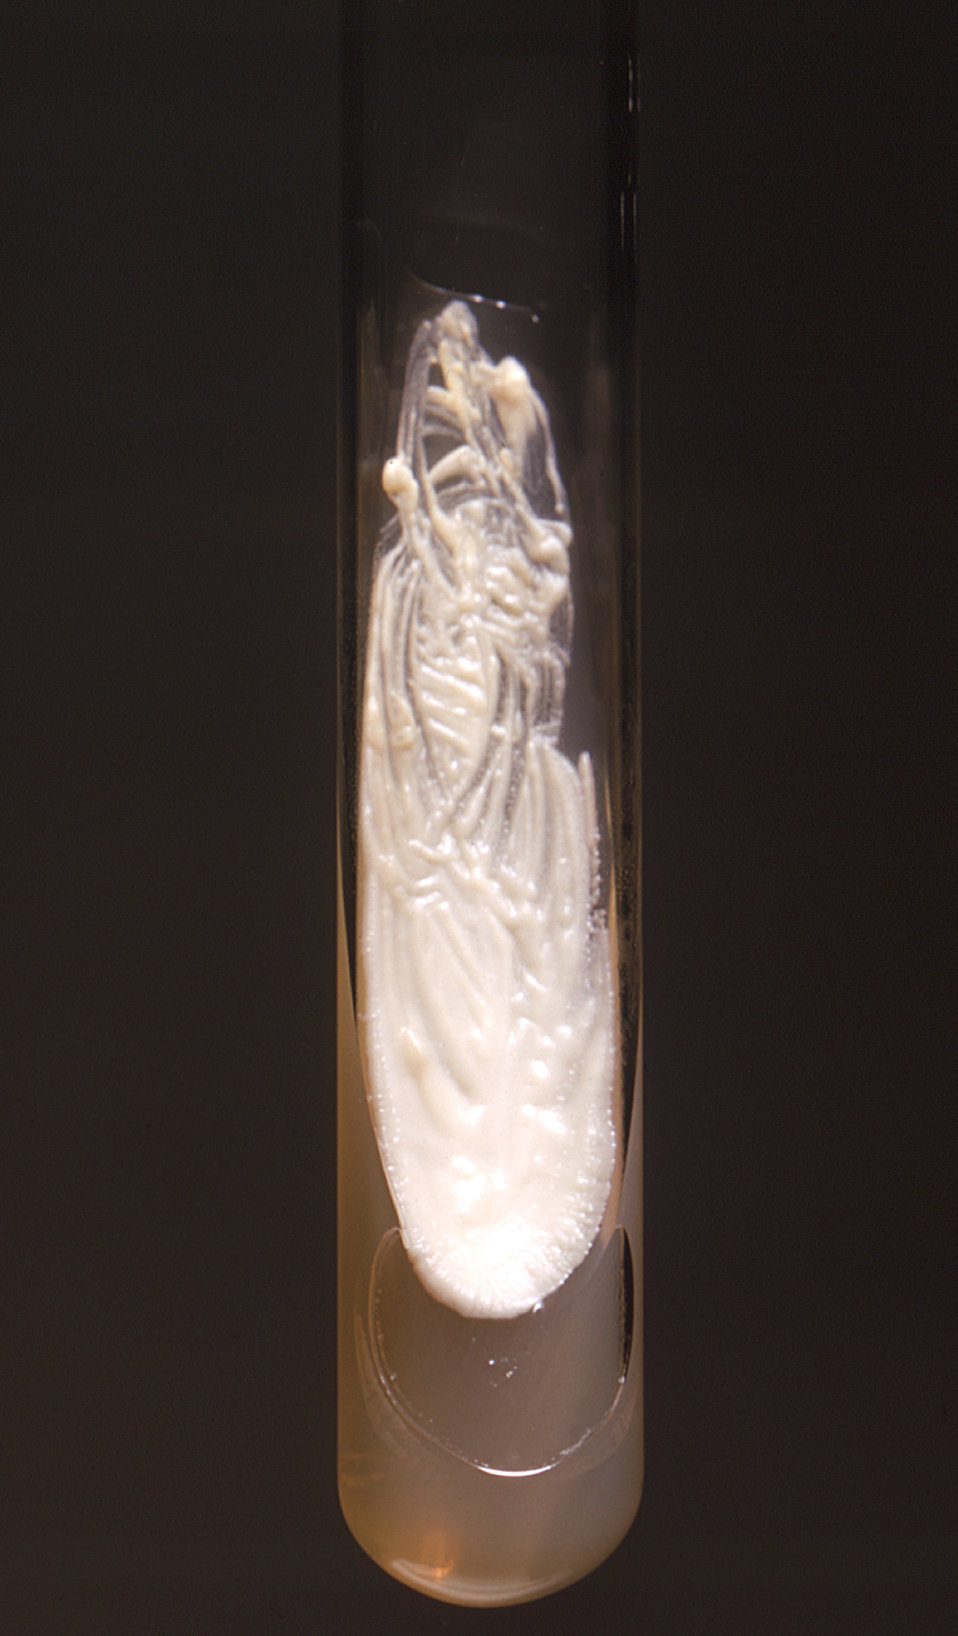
This 1971 image depicted a Sabourauds dextrose agar slant culture, which after 5 days had cultivated a colony of Prototheca moriformis algal organisms.